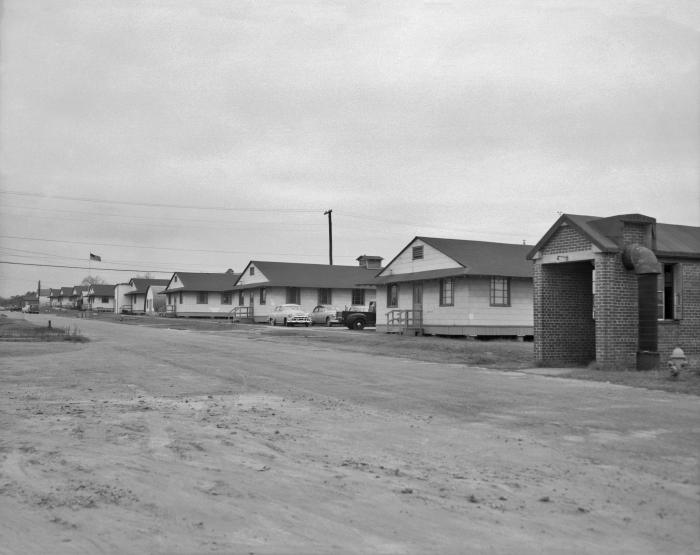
This 1954 photograph depicted rows of laboratory facilities located on the Centers for Disease Control's Chamblee, Georgia Campus.